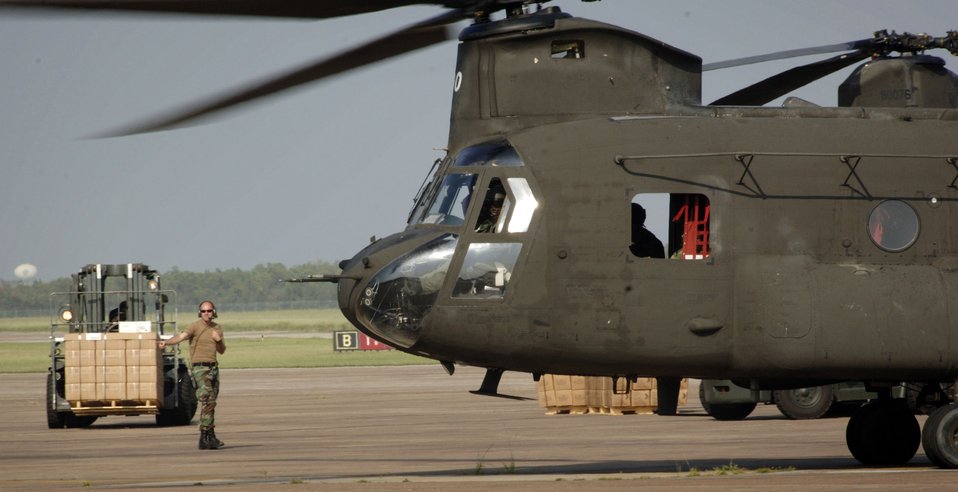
Loading supplies

ELLINGTON FIELD, Texas - Airmen from the 136th Tanker Airlift Control Element and the 136th Aerial Port Squadron assist with the loading of supplies onto an Army CH-47 Chinook here Sept. 25 in support of the Hurricane Rita relief effort. The Airmen are from Naval Air Station-Joint Reserve Base Fort Worth, Texas.